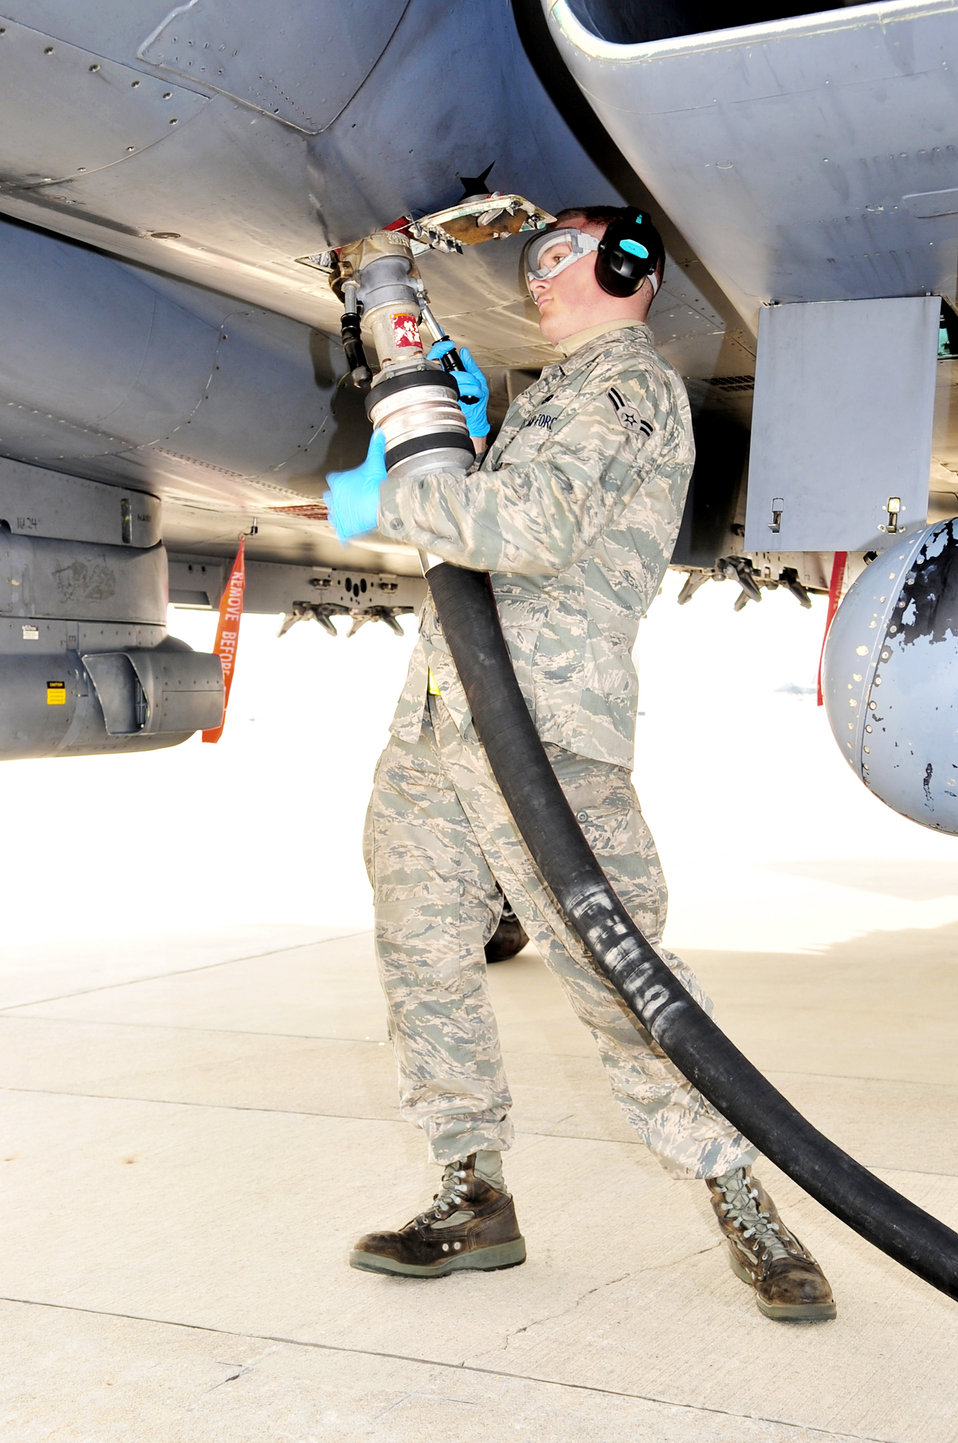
Easy fit

Airman 1st Class Phillip Huston connects a fuel hose to an F-15E Strike Eagle during a hot pit Nov. 17, 2009, at Seymour Johnson Air Force Base, N.C. A hot pit is when the jet lands and shuts down one engine to refuel for another mission. Airman Huston is assigned to the 4th Aircraft Maintenance Squadron and is from Salisbury, N.C.